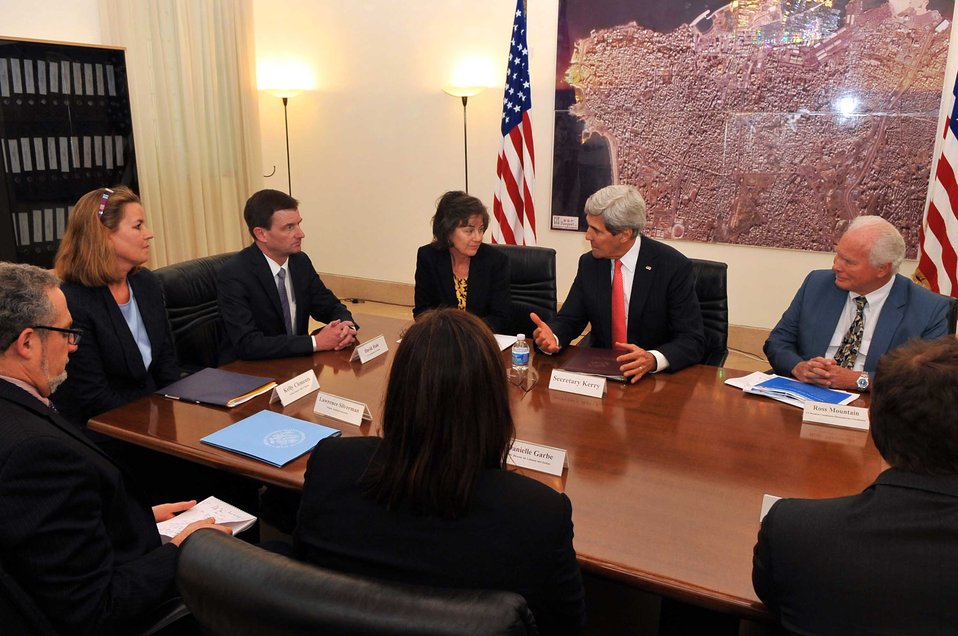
Secretary Kerry Meets With Humanitarian Providers During Stop in Beirut

U.S. Secretary of State John Kerry speaks with United Nations and Mercy Corps representatives who provide humanitarian services in Lebanon during a visit to Beirut on June 4, 2014.